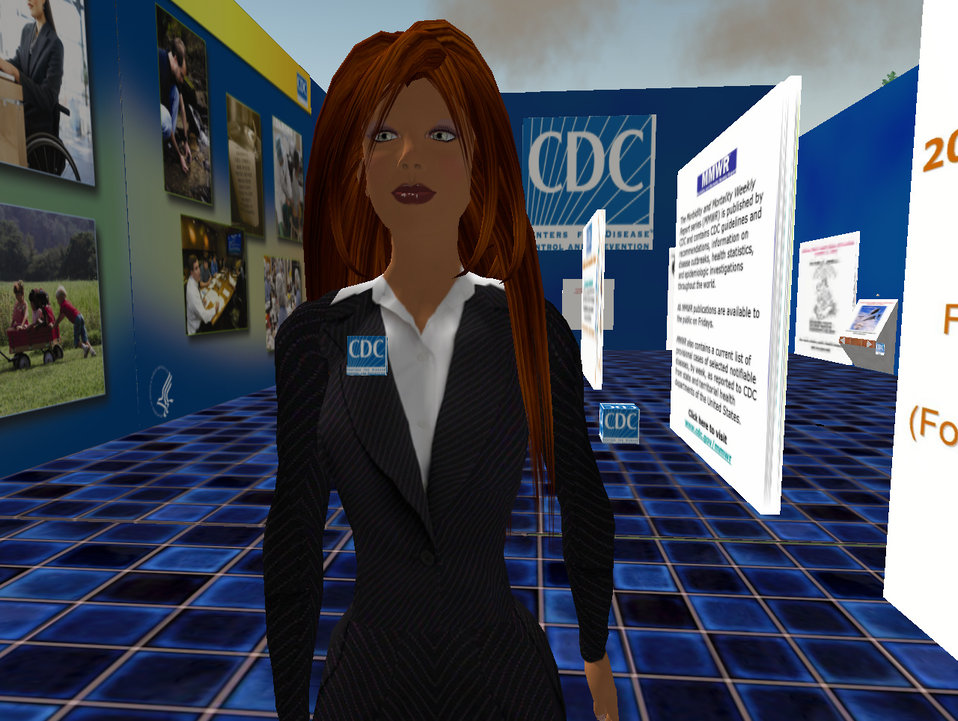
This computer-generated image depicts Hygeia Philo, the CDC's lead avatar in the virtual world of Second Life. This was the forth design stage of the avatar. Customizing an avatar's appearance is a key aspect to community acceptance. In preparation for the first CDC Health Fair, which took place inside Second Life in October, 2006, the avatar was outfitted with a more corporate design for clothing, more realistic facial features and hair, as well as a CDC badge, in order to more fully simulate a trade show booth attendant, and to reinforce the link to the CDC's brand identity. Dr. John Anderton designed Hygeia Philo, whose name is based on the Greek meaning 'lover of health', to be the modern muse of health, serving as lead health spokesperson and health educator in this new virtual space. See PHIL 10002, 10005, 10007, 10008, 10009, 10011, 10012, 10014, 10015, and 10016 for additional images of Ms. Philo.